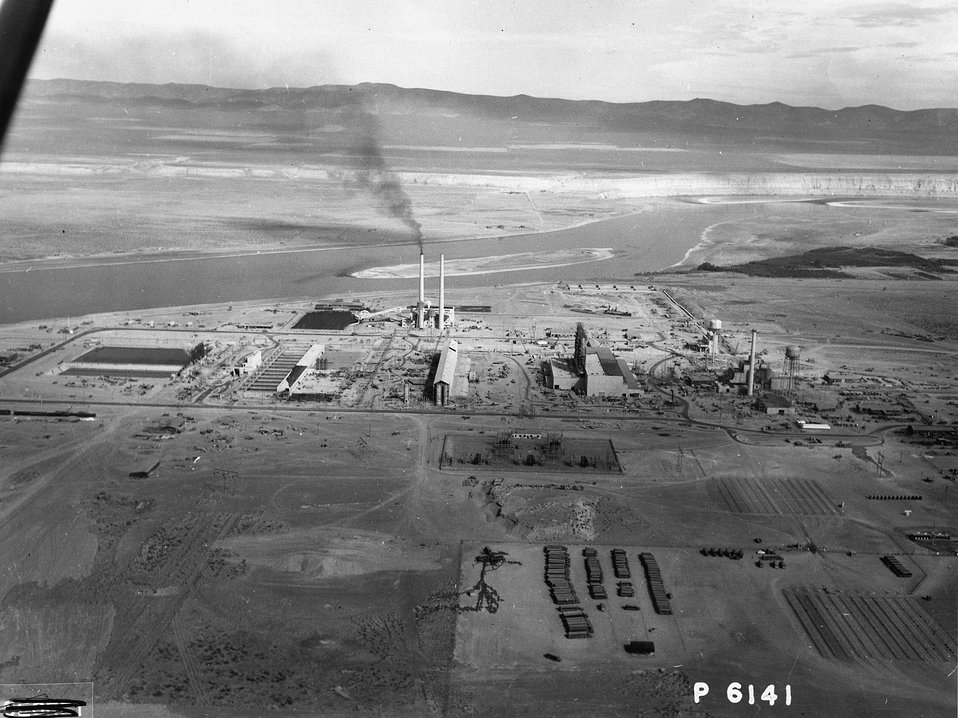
Pile Area. c. 1956